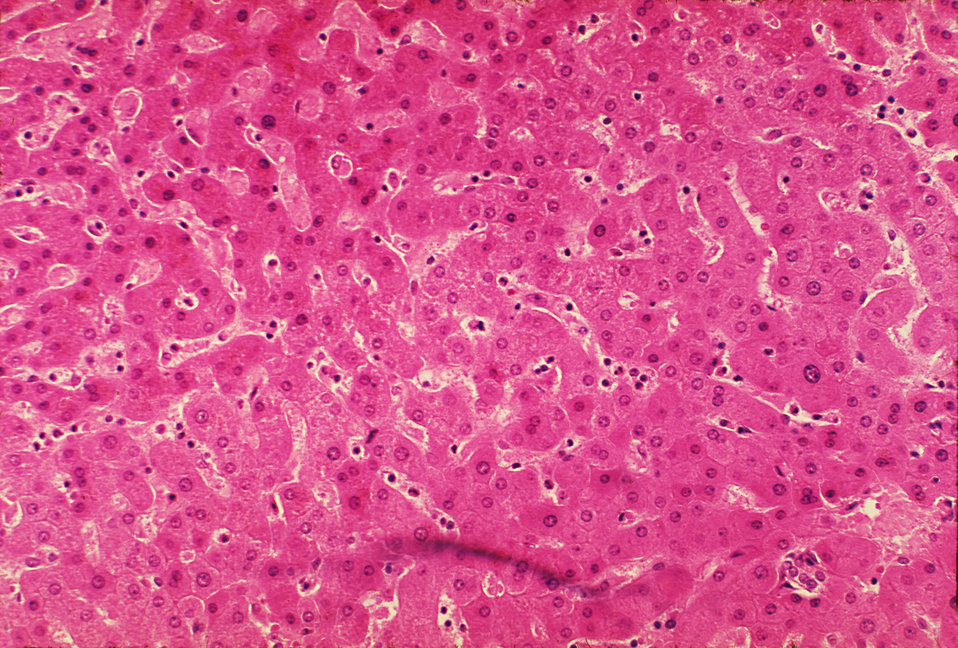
Histopathology of liver in fatal human anthrax.